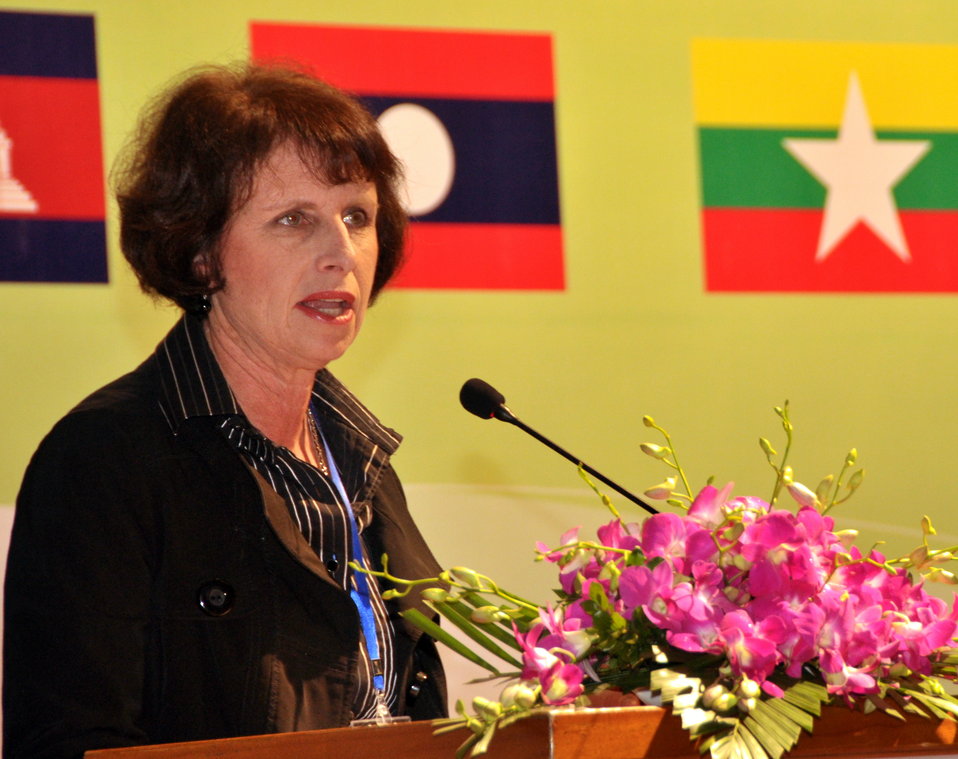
Ms. Lorraine Hariton, Special Representative for Commercial and Business Affairs, U.S. Department of State, gives remarks at the Lower Mekong Initiative Infrastructure Best Practices Exchange in Hanoi

Hanoi: January 14, 2013